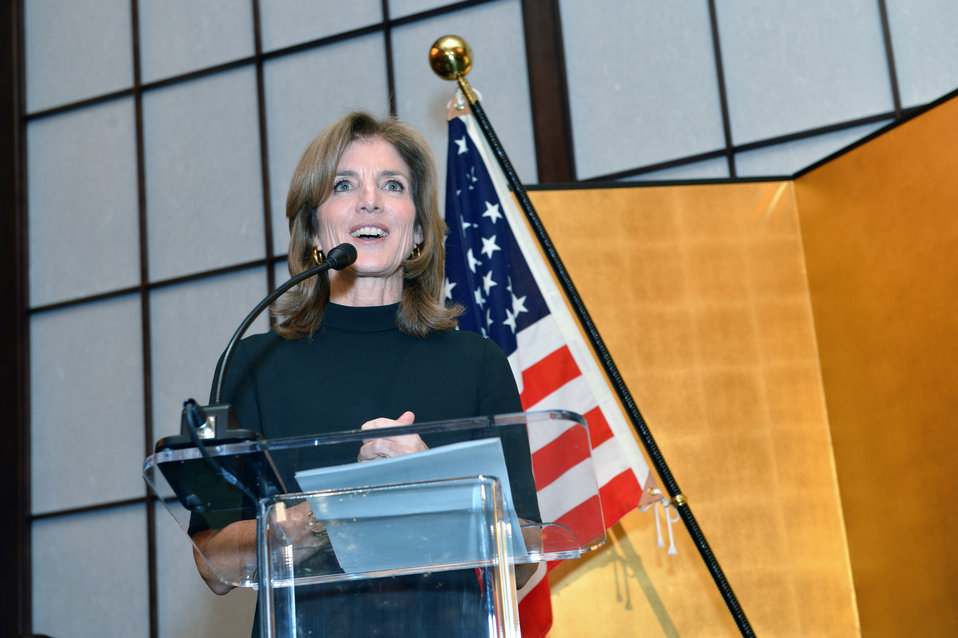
Ambassador Kennedy Delivers Remarks at a Reception in her Honor

U.S. Ambassador to Japan Caroline Kennedy delivers remarks at a reception in her honor at the Japanese Ambassador to the United States' residence in Washington, D.C., on November 12, 2013.